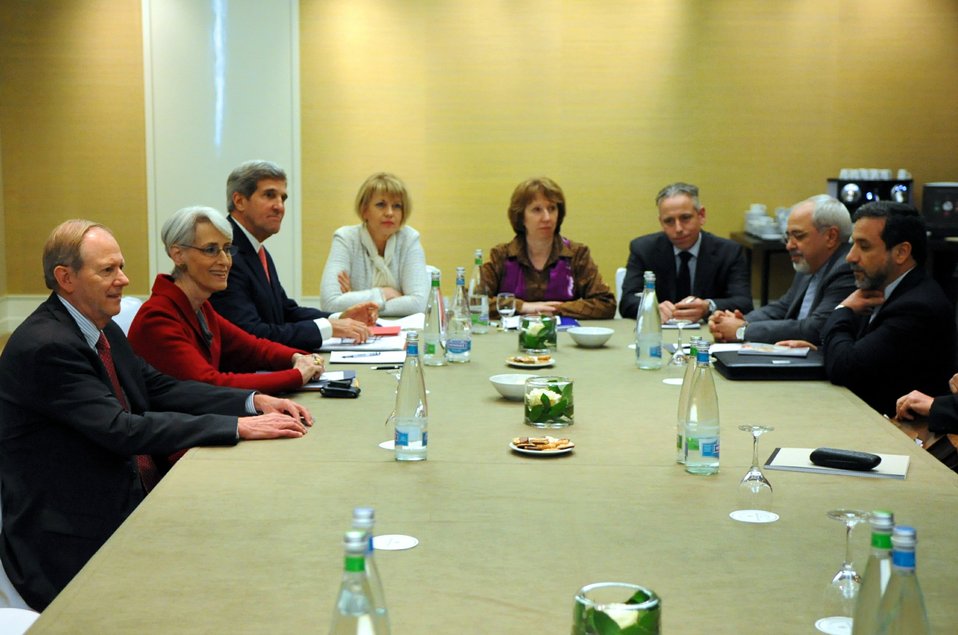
Secretary Kerry, EU High Representative Ashton, and Iranian Foreign Minister Zarif Meet

U.S. Secretary of State John Kerry, second left, meets with EU High Representative for Foreign Affairs, Catherine Ashton, center, and Iranian Foreign Minister Mohammad Javad Zarif, third right, for a trilateral discussion focused on Iran's nuclear capabilities on November 9, 2013, in Geneva, Switzerland.